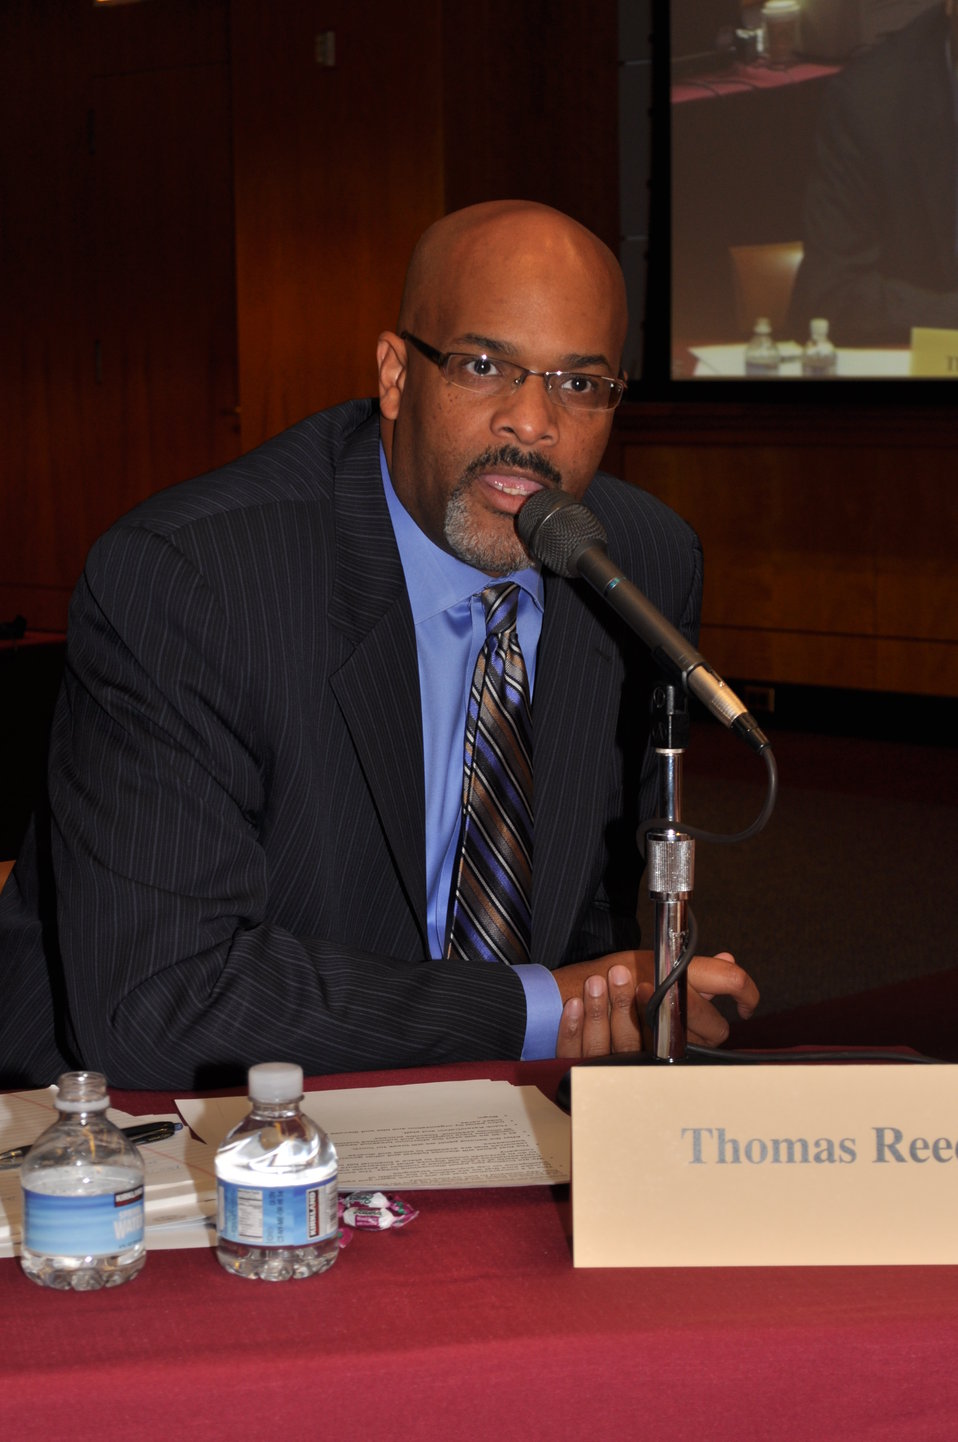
Capitalization Strategies

Workshop for small, minority and women owned businesses. Hosted by the Office of Communications Business Opportunities